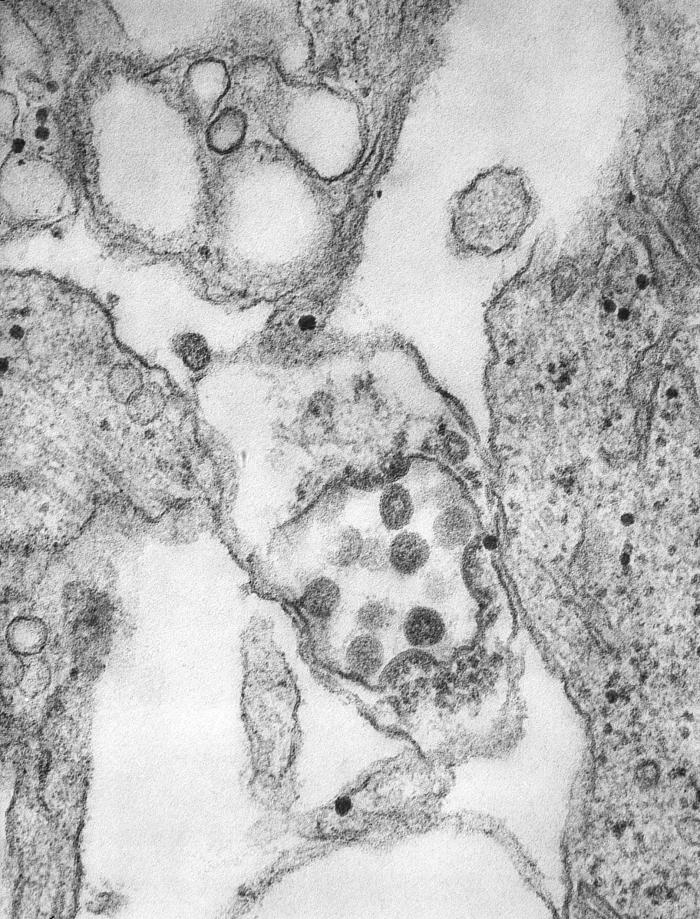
This 1975 thin section transmission electron micrograph (TEM) revealed the presence of a number of human cooronavirus, HCoV-229E virions. This organism is a member of the family, Coronaviridae, and the genus Coronavirus. The coronavirus helical genome is composed of positive-sense single-stranded RNA (( ) ssRNA). This is an enveloped virus, which means that its outermost covering is derived from the host cell membrane.